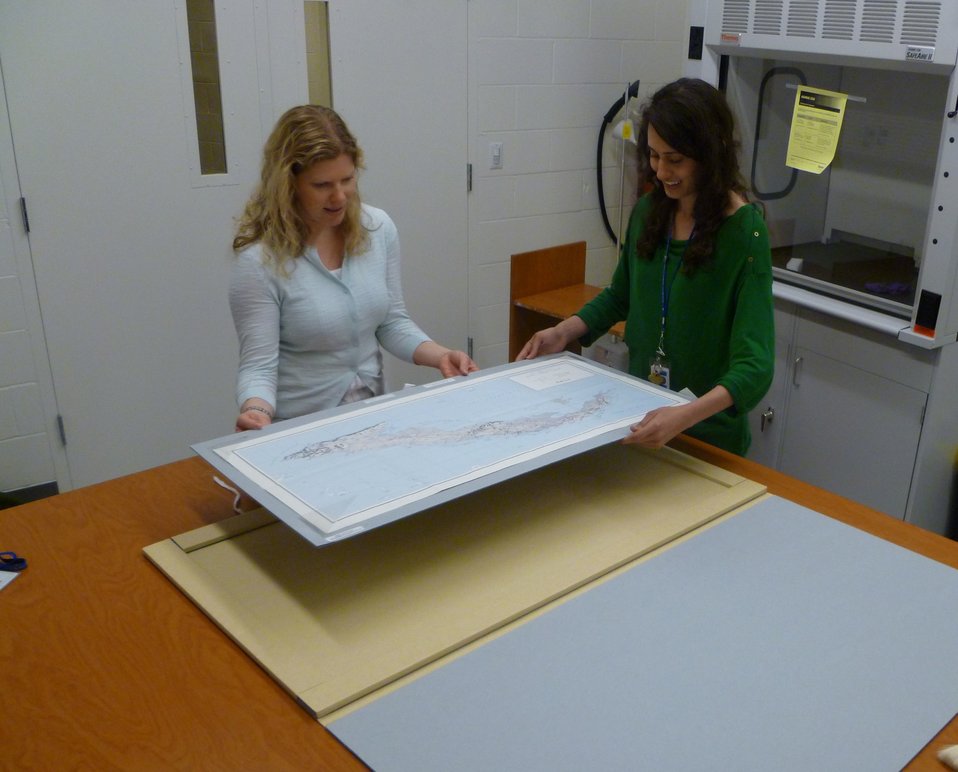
Museum specialist Heather Joines and archivist Stacey Chandler examine a map of Cuba annotated by John F. Kennedy during the Cuban Missile Crisis. The document was on display in the JFK Library Museum for the Cuban Missile Crisis anniversary exhibit; Location: John F. Kennedy Presidential Library, Boston, MA